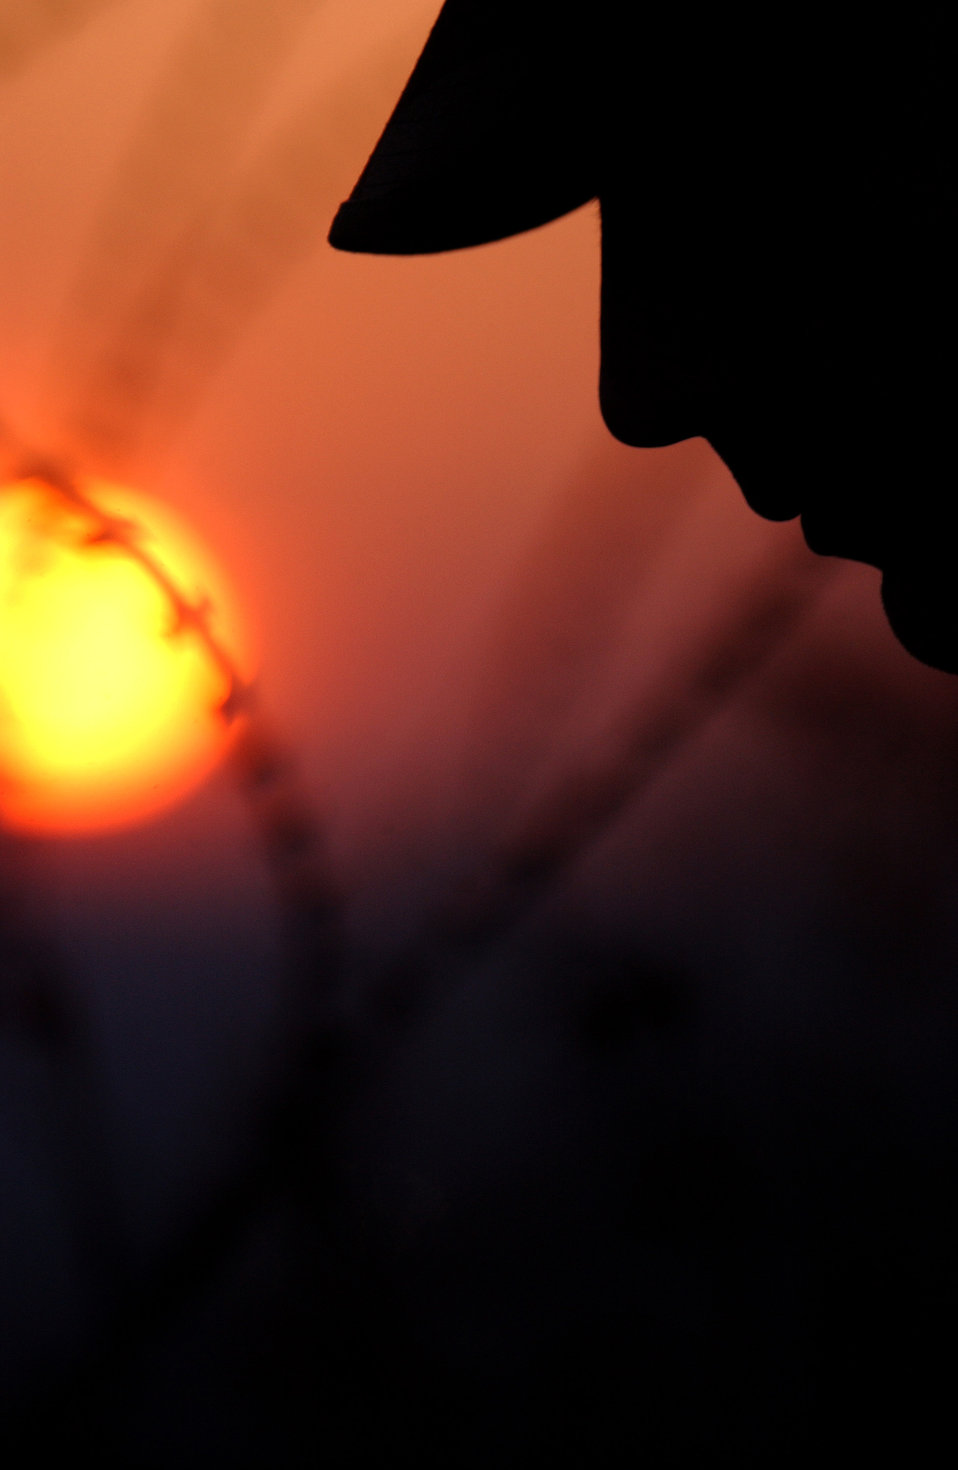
Sun set

OSAN AIR BASE, South Korea -- Staff Sgt. Garrett Rosier from the 1st Combat Camera Squadron at Charleston Air Force Base, S.C., watches the sun set here March 19. Members of the squadron deployed to Osan to cover an annual exercise.